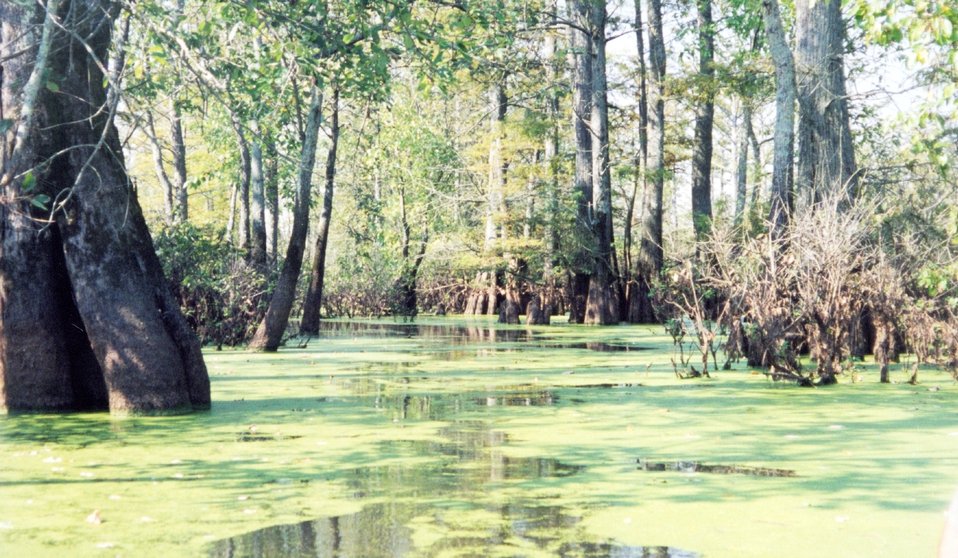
Algae covered waters